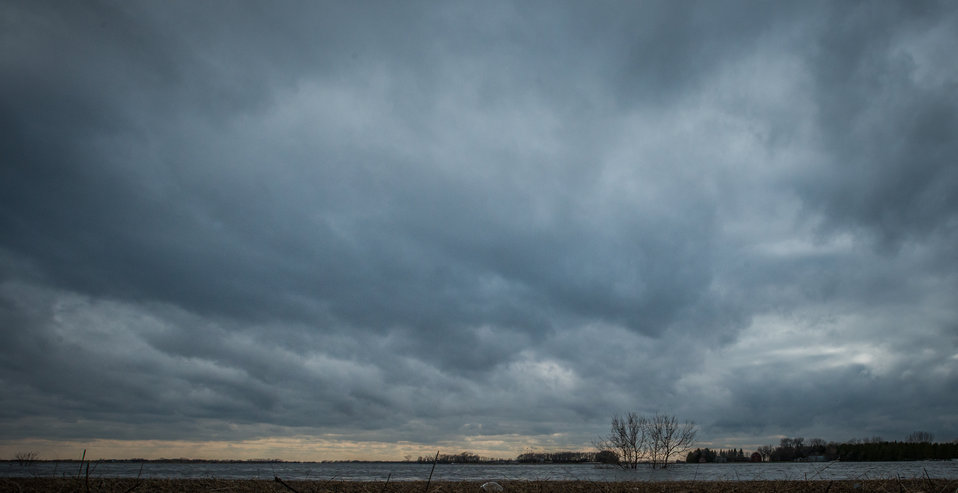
Trees that normally form windbreaks to reduce wind based soil erosion, now stand to define flooded farmsteads along the Red River and serve as dry perches for local birds in the Red River basin, of North Dakota, on Wednesday, May 1, 2013. To learn about the Red River Basin Initiative, see www.mn.nrcs.usda.gov/news/features13/RRBI.html.